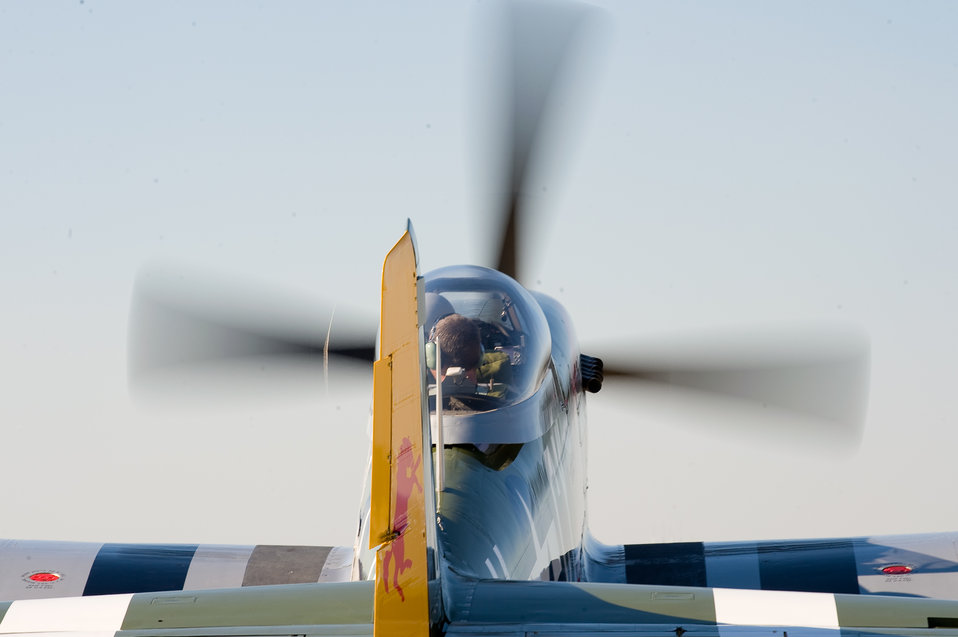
Warrior Flight